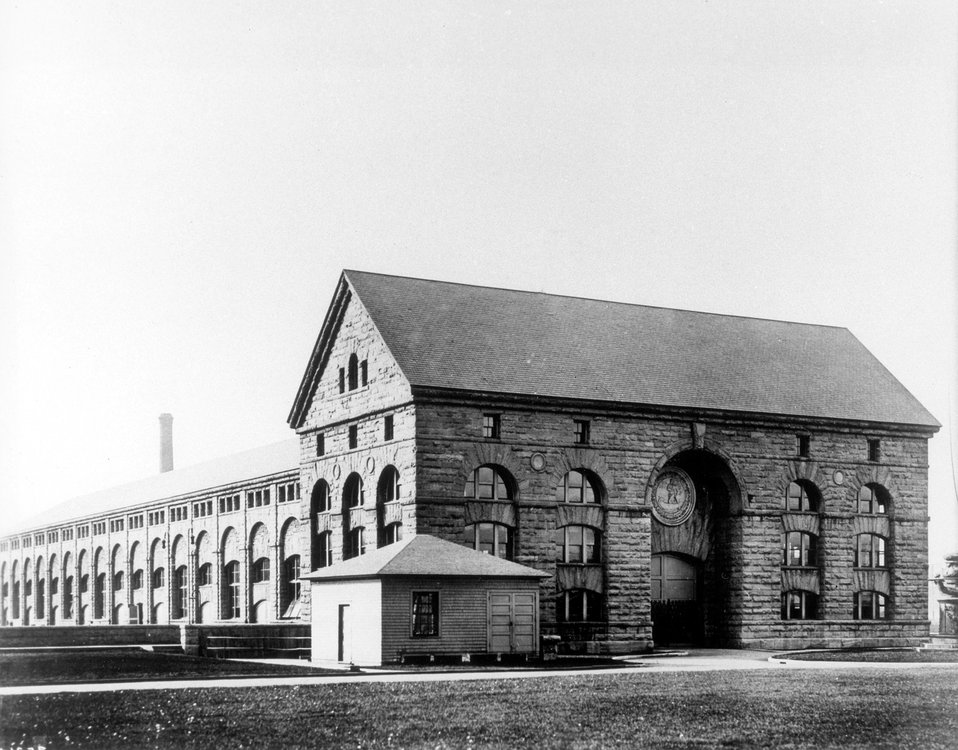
Power Plant, Niagara Falls.